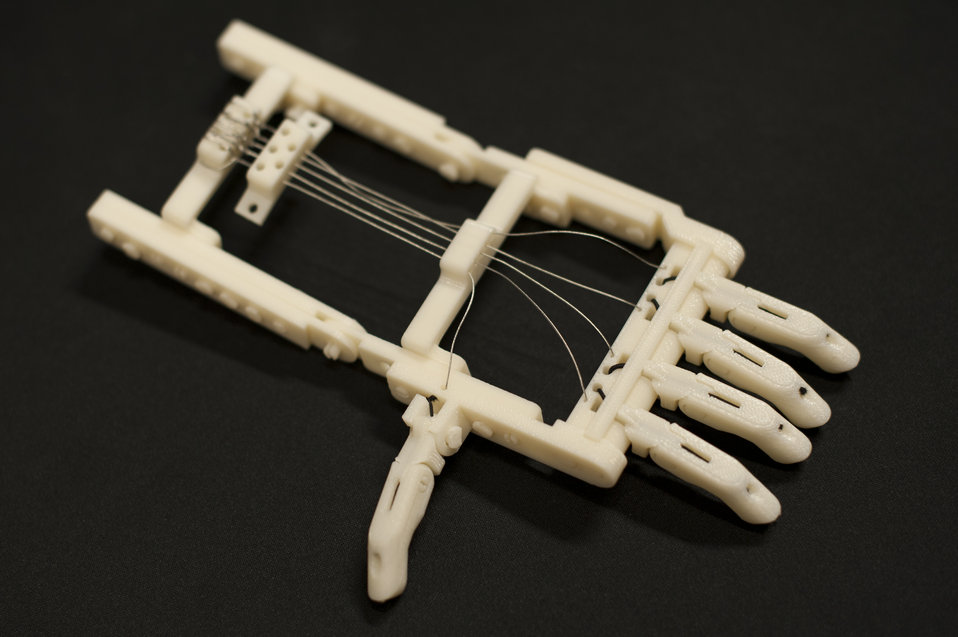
3-D Printing at FDA (8231)

The Snap-Together RoboHand prosthetic was invented by South African carpenter Richard van As and made available for free on the Internet. Before printing, the hand can be individually sized, and all connecting pieces are also printed. The device can now be printed for less than $100.

3-D printing—the process of making a three-dimensional solid object of virtually any shape from a digital model—is spurring innovation in manufacturing, dramatically reducing the time required to design new products and allowing designs to be built that were not possible before. At FDA, we’re using it to expand both our research and our review of new and innovative medical products. To learn more, read this FDA Voice blog post:

• FDA Goes 3-D